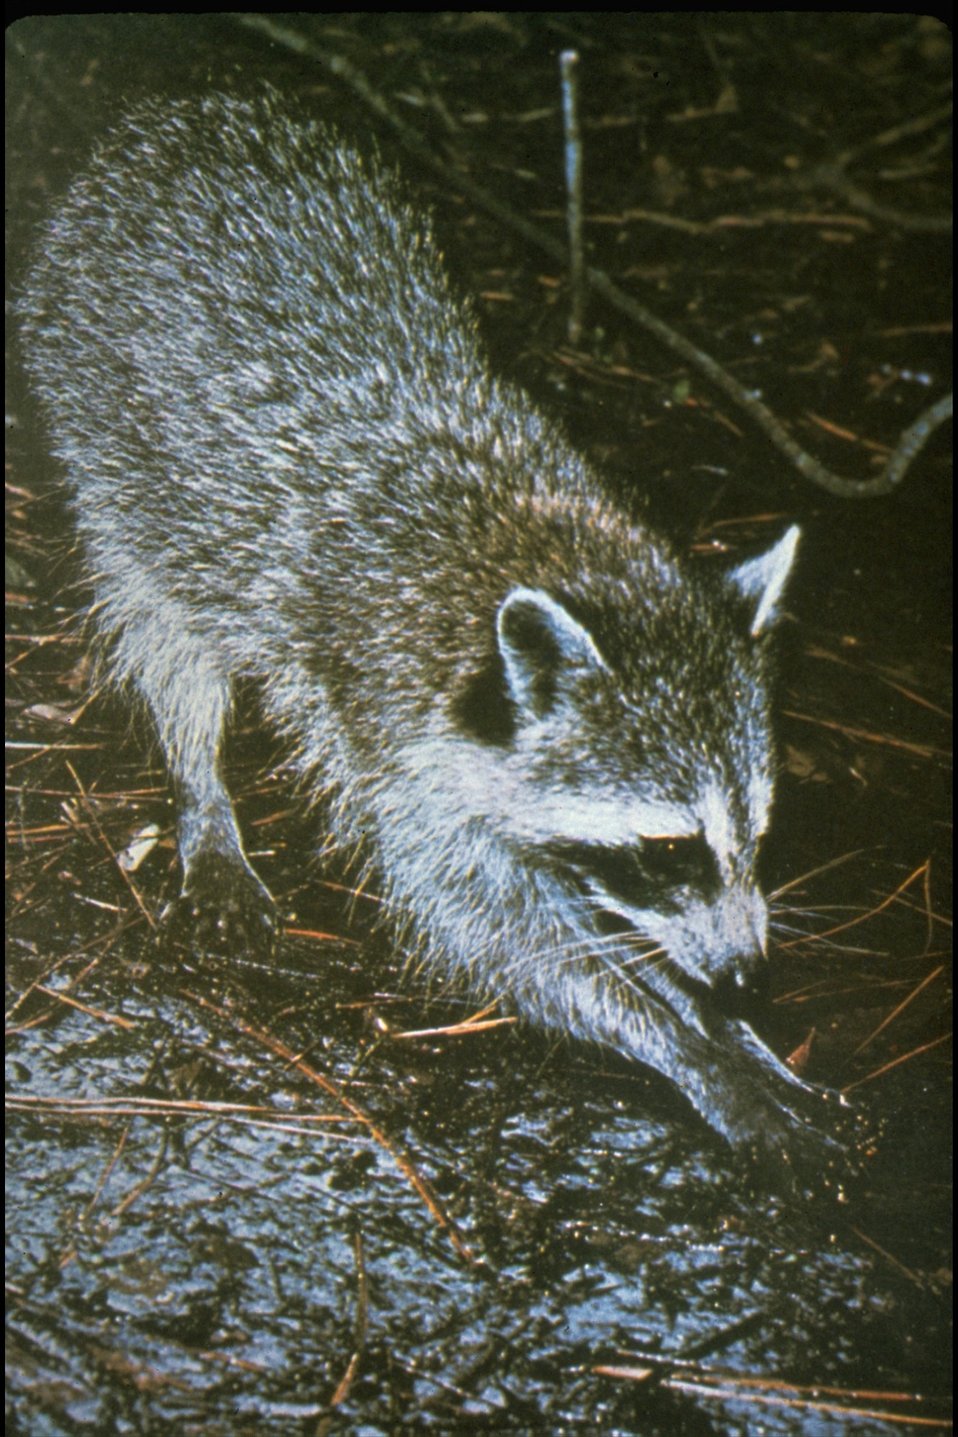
Rogue River - Racoon.